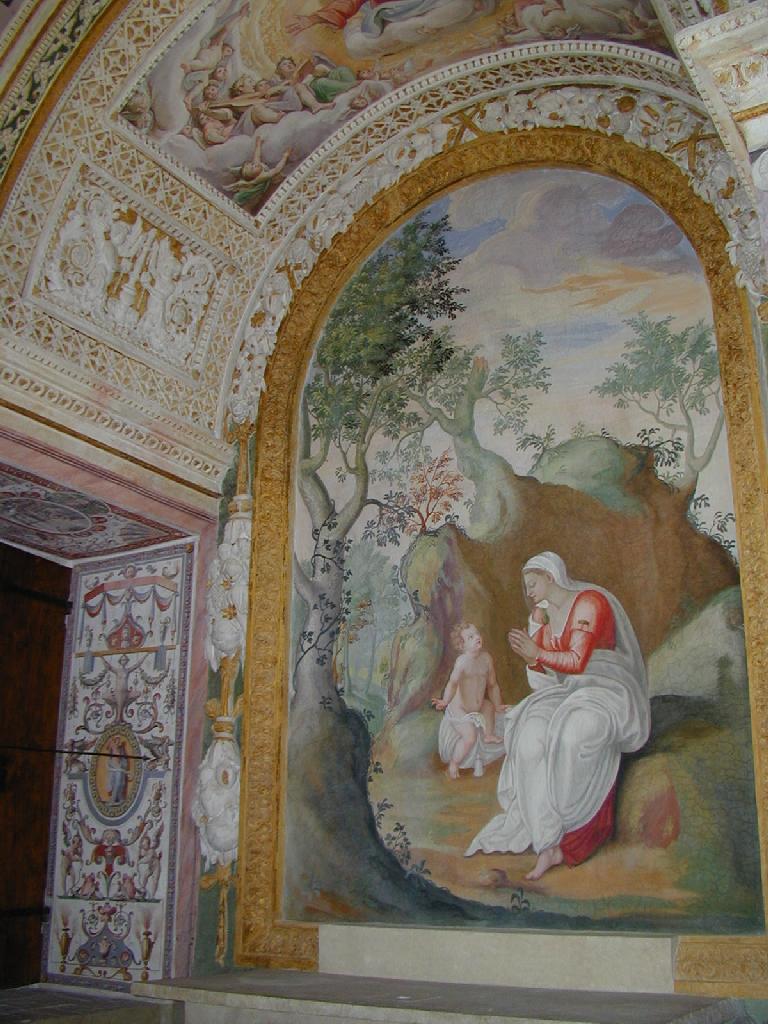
000910 tivoli v d este 10 cappella